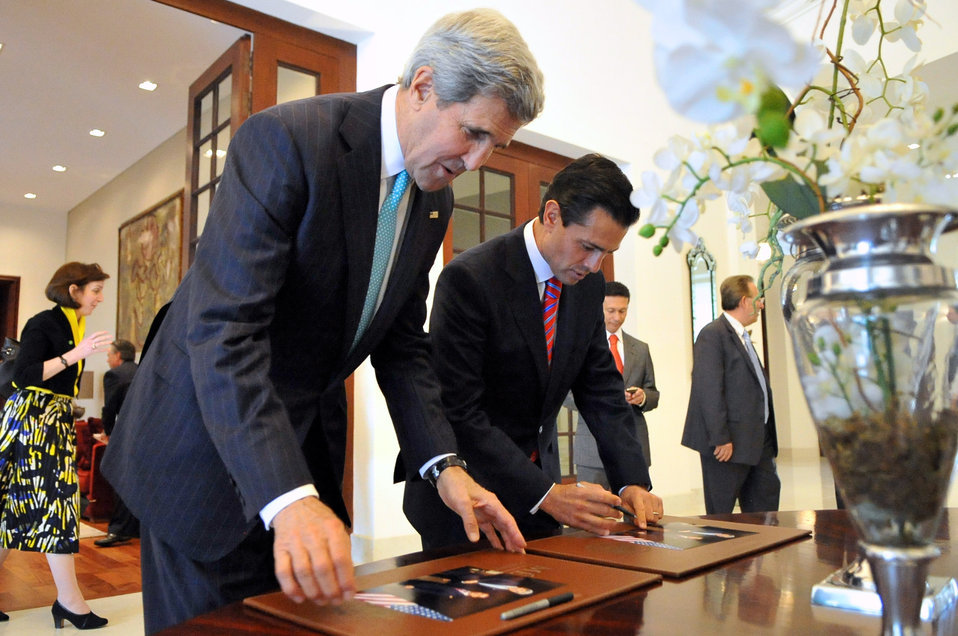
Secretary Kerry, Mexican President Peña Nieto Sign Photos

U.S. Secretary of State John Kerry and Mexican President Enrique Peña Nieto prepare to sign and exchange photos of their handshake an hour earlier before a bilateral meeting at the presidential compound Los Pinos in Mexico City, Mexico on May 21, 2014.